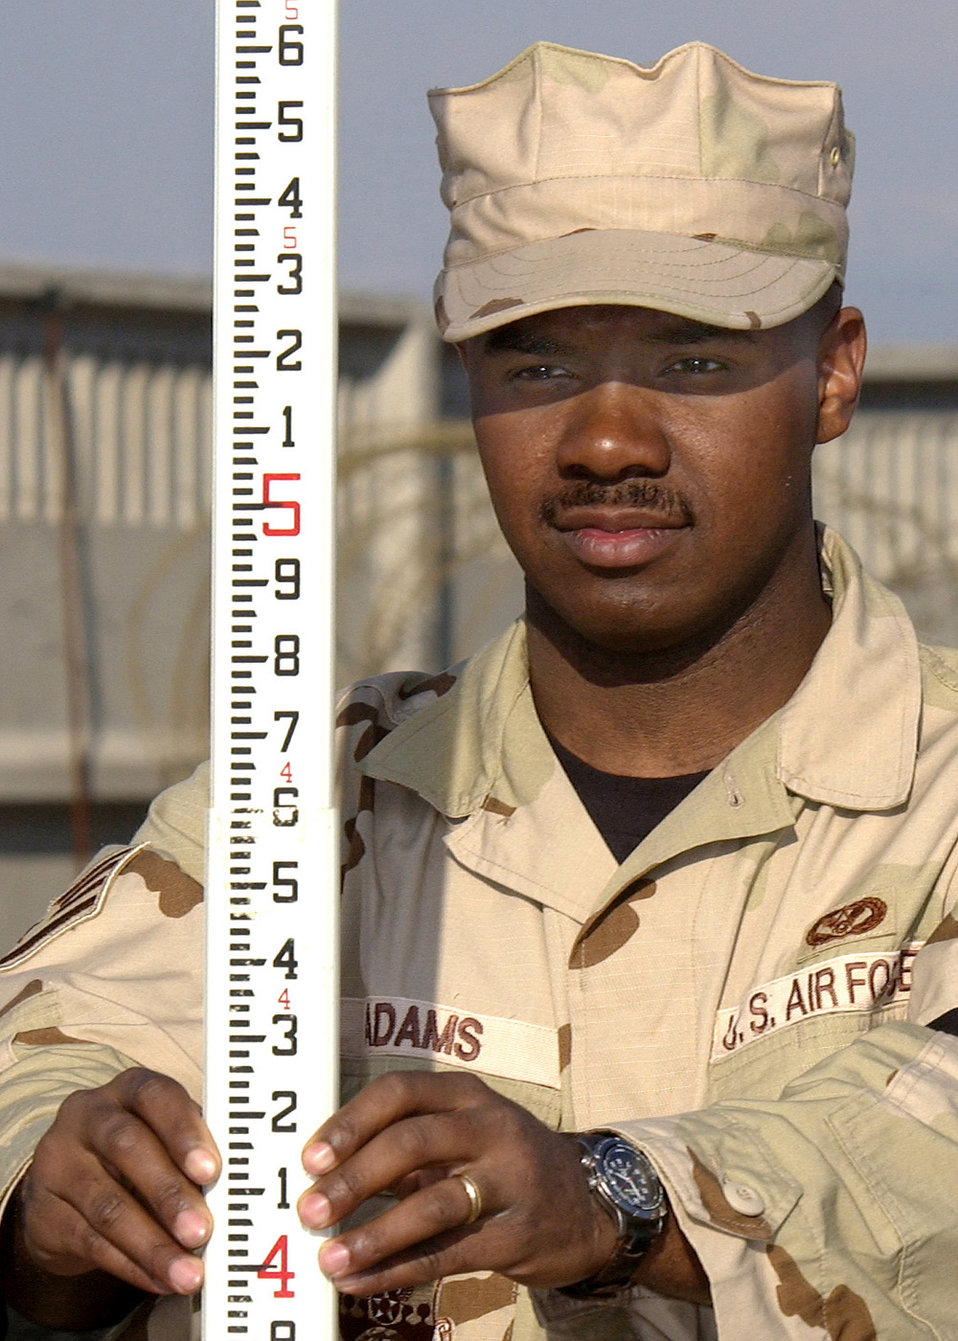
'Dirt Boyz' digging in

MANAS AIR BASE, Kyrgyzstan -- Staff Sgt. Tyler Adams holds a measuring stick to ensure the proper ground grade is complete at the fuels farm construction site here. Sergeant Adams and other Airmen of the 376th Expeditionary Civil Engineer Squadron will move more than 63 million pounds of dirt by the end of the project. He is deployed from Ellsworth Air Force Base, S.D.